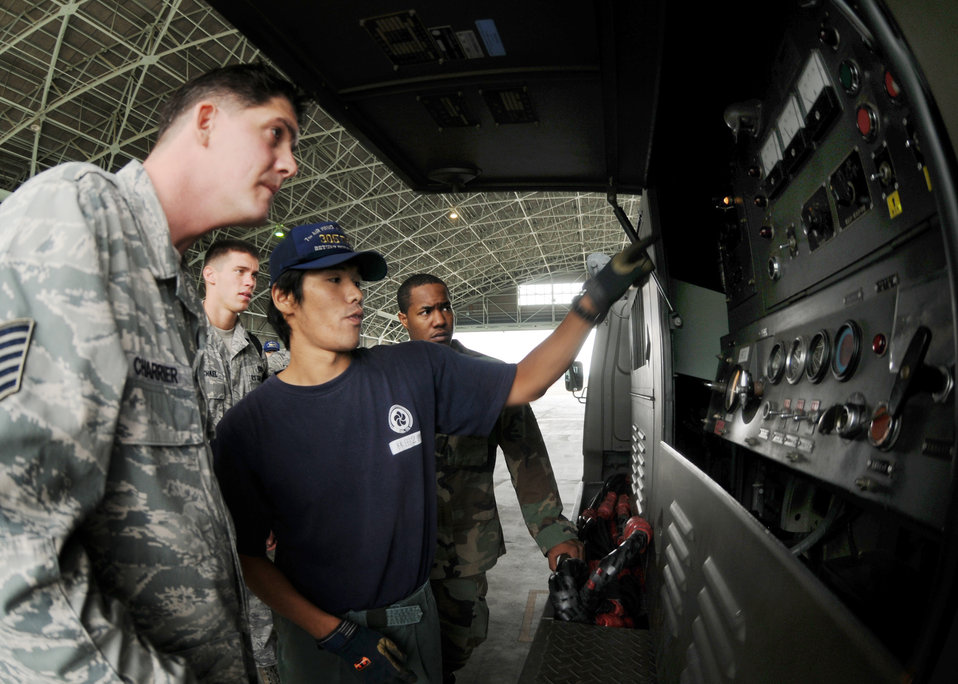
Kadena maintainers train on Japanese equipment during exercise

Maintainers from the 67th Aircraft Maintenance Unit from Kadena Air Base, Japan, receive training from Japan Air Self Defense Force Staff Sgt. Hayashida on aerospace ground equipment Oct. 3, 2009, at Hyakuri Air Base, Japan. The visit is part of an aviation training relocation exercise between Kadena AB, Okinawa and Japan Air Self Defense Force.